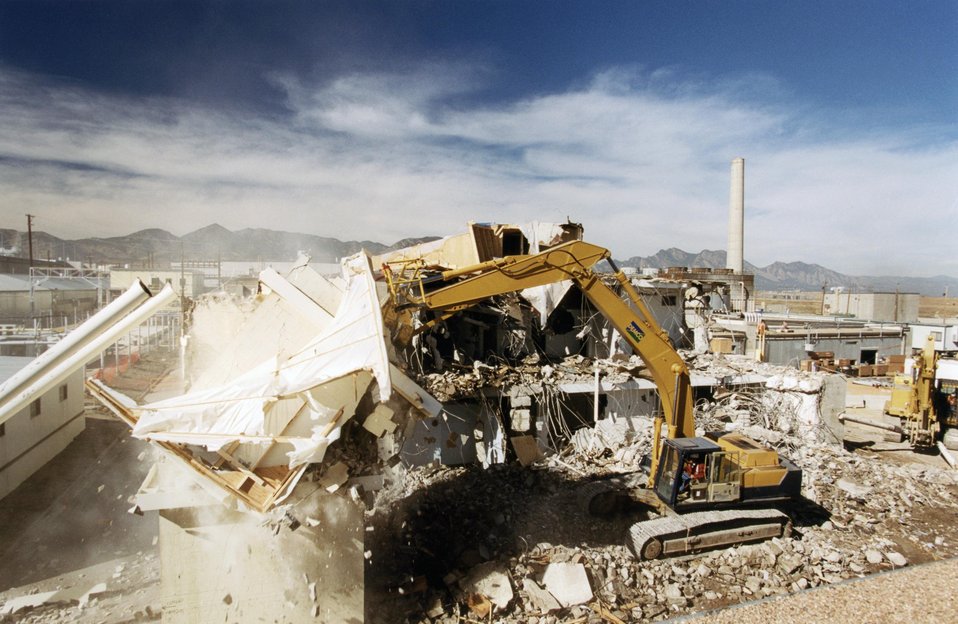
DEMOLITION ACTIVITY, BUILDING 779.
THE ROCKY FLATS ENVIRONMENTAL TECHNOLOGY SITE, KNOWN AS ROCKY FLATS, IS LOCATED 15 MILES NORTHWEST OF DENVER, COLORADO. FOR 40 YEARS, PRIOR TO DECEMBER 1989, ROCKY FLATS MADE PARTS FOR NUCLEAR WEAPONS. CURRENTLY THE SITE'S MISSION IS TO SAFELY CLEANUP AND CLOSE DOWN ROCKY FLATS.